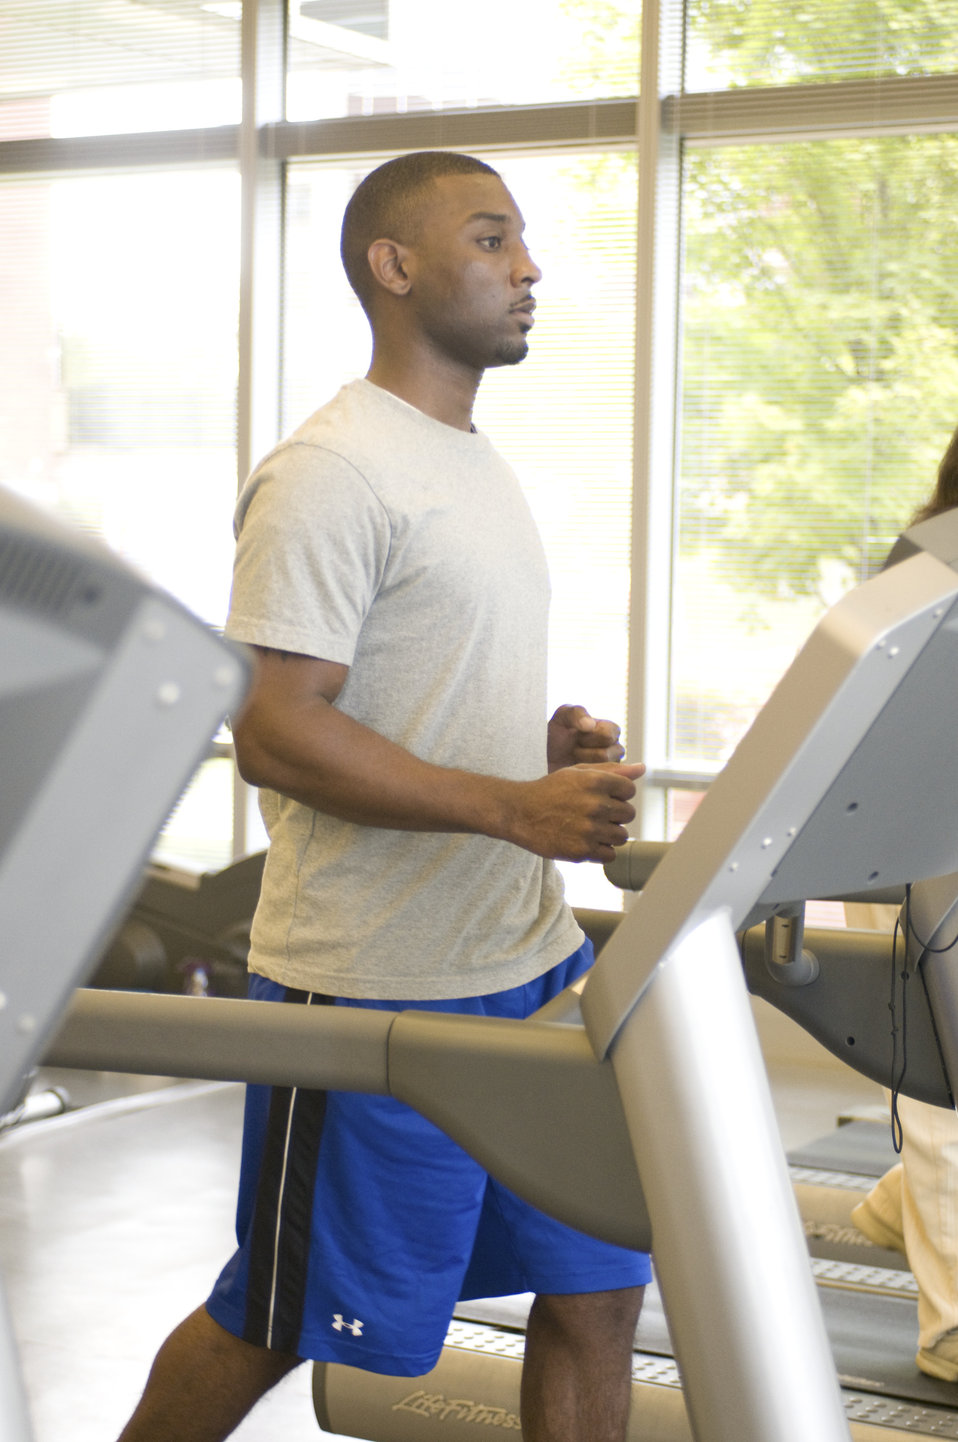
This image was captured on one of the Centers for Disease Control's (CDC) campuses, in the facility's fitness center, where a number of scheduled group classes are provided for employees' health and enjoyment. In this particular view, a male CDC staffer was making use of a treadmill, taking part in some aerobic exercise.